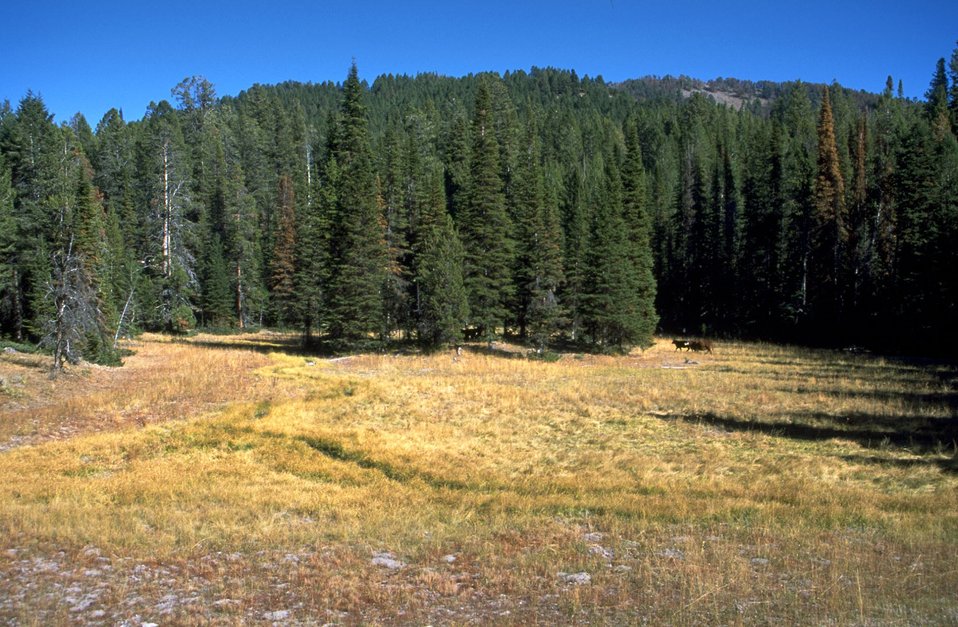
Meadow in the Centennial Mountains